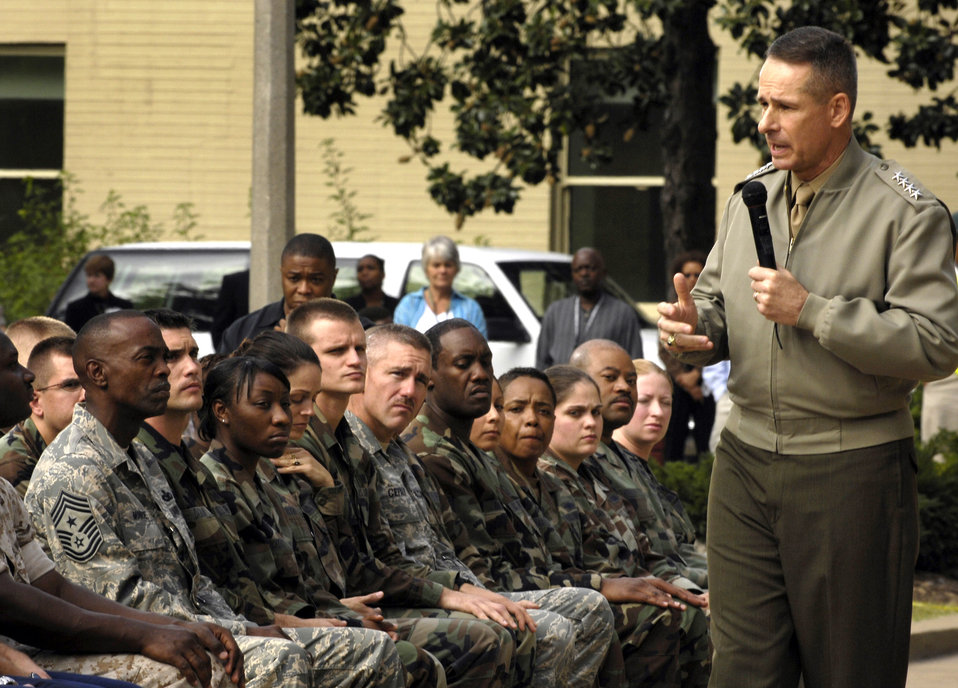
Farewell from the chairman

Marine Corps Gen. Peter Pace, chairman of the Joint Chiefs of Staff, thanks enlisted servicemembers for their dedication and bids them farewell during an enlisted call at the Pentagon Sept. 20.